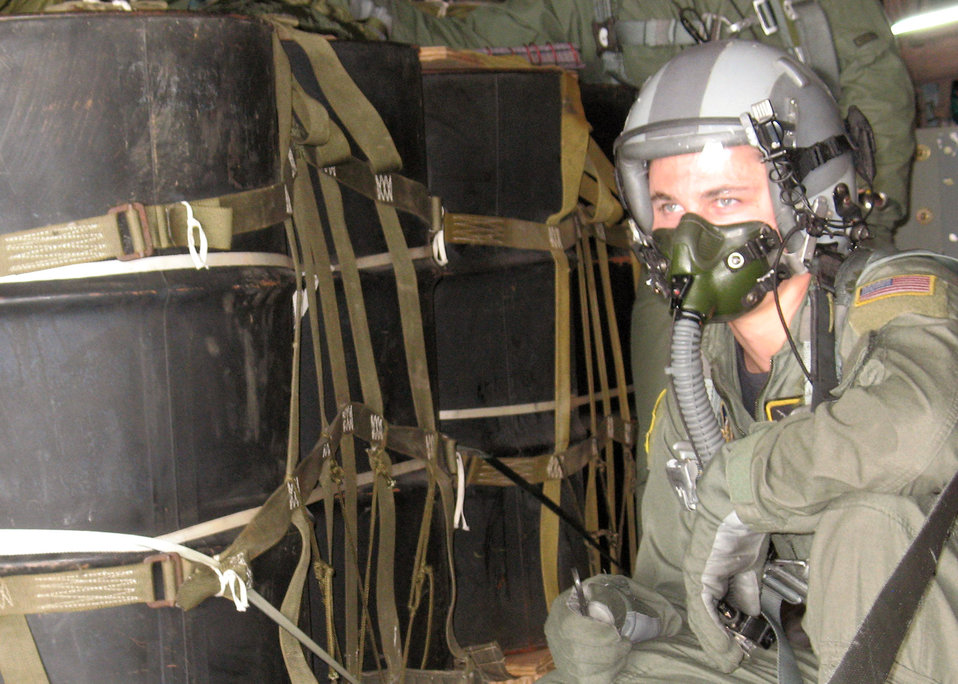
GPS-driven drop sondes improves airdrop accuracy

Airman 1st Class Joshua Coda prepares to release cargo March 24 during a training mission at Andersen Air Force Base, Guam. Aircrews are learning to use the Global Positioning System technology drop sondes to more accurately airdrop cargo. Airman Coda is a loadmaster with the 36th Airlift Squadron at Yokota Air Base, Japan.